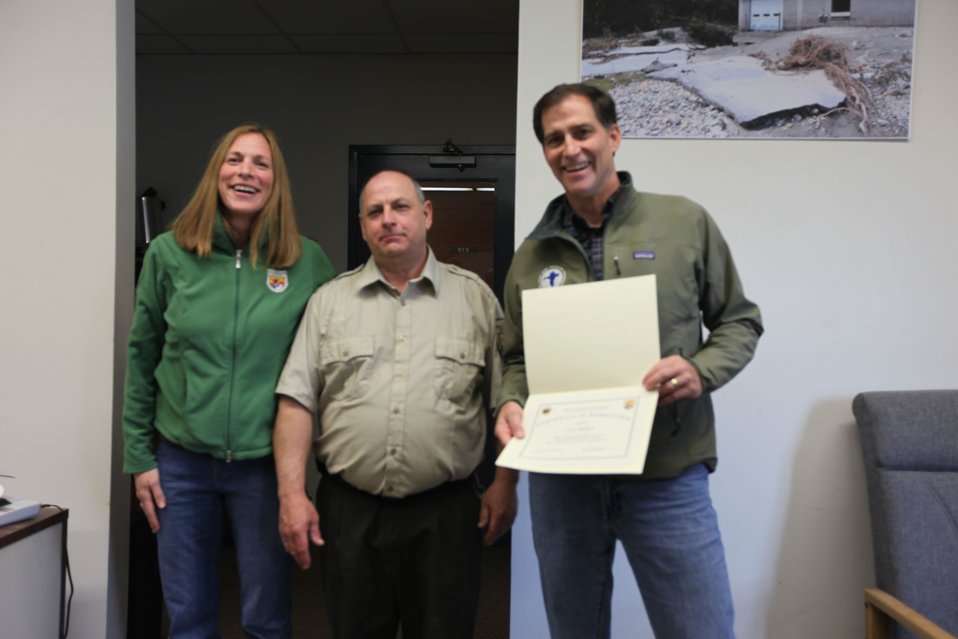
Special Award from Dan Ashe for Les Miller

U.S. Fish & Wildlife Service Director Dan Ashe visits the Northeast Region
for a tour of the White River National Fish Hatchery in Bethel, Vermont on
April 27, 2012. The hatchery was devastated by Tropical Storm Irene and
Dan Ashe had the chance to meet and thank the staff for their heroic work.
Director Ashe also visited restoration/flood response/fish passage project
sites in Rochester, Vermont and met with local officials and staff from the
White River Partnership.